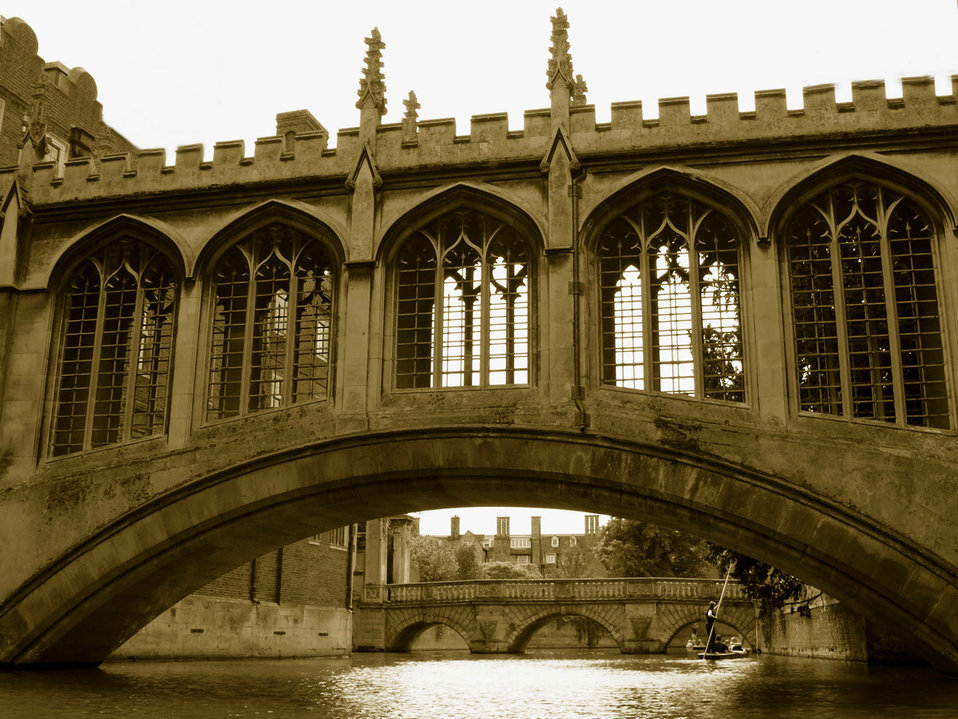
Bridge of sighs cambridge.